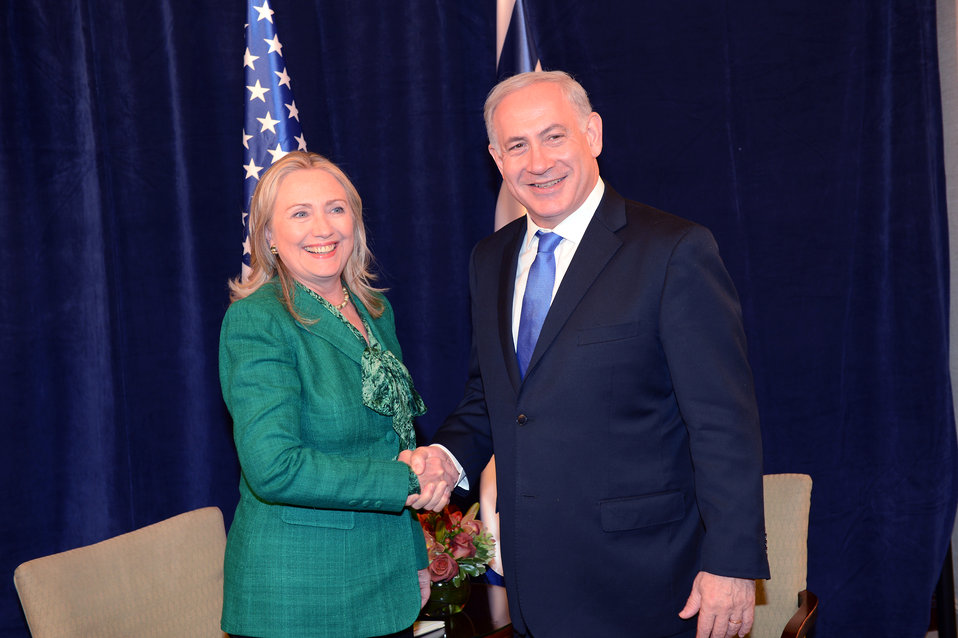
Secretary Clinton Meets With Israeli Prime Minister Netanyahu

U.S. Secretary of State Hillary Rodham Clinton meets with Israeli Prime Minister Benjamin Netanyahu in New York, New York on September 27, 2012.